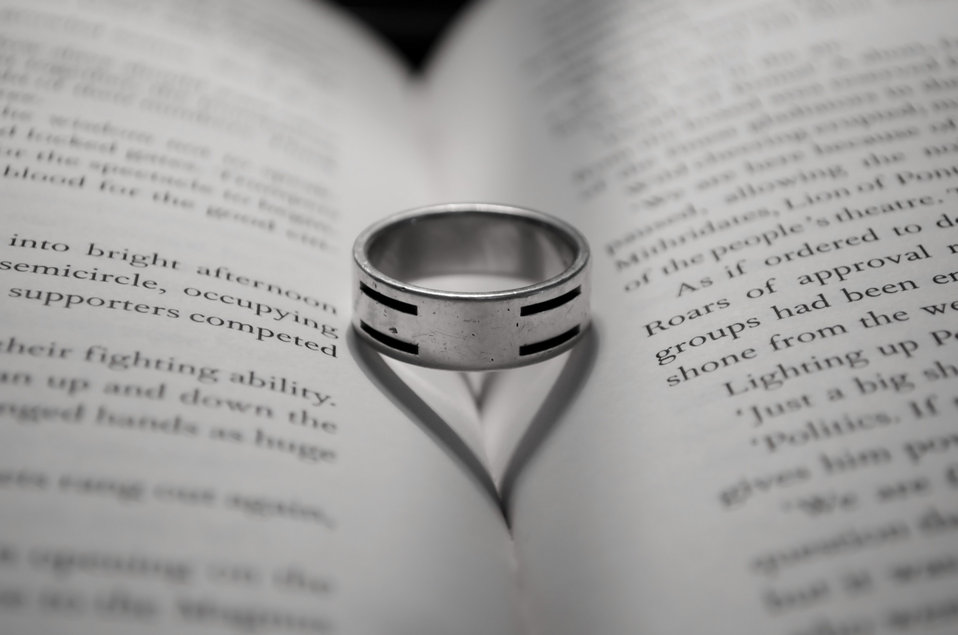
Heart and ring.